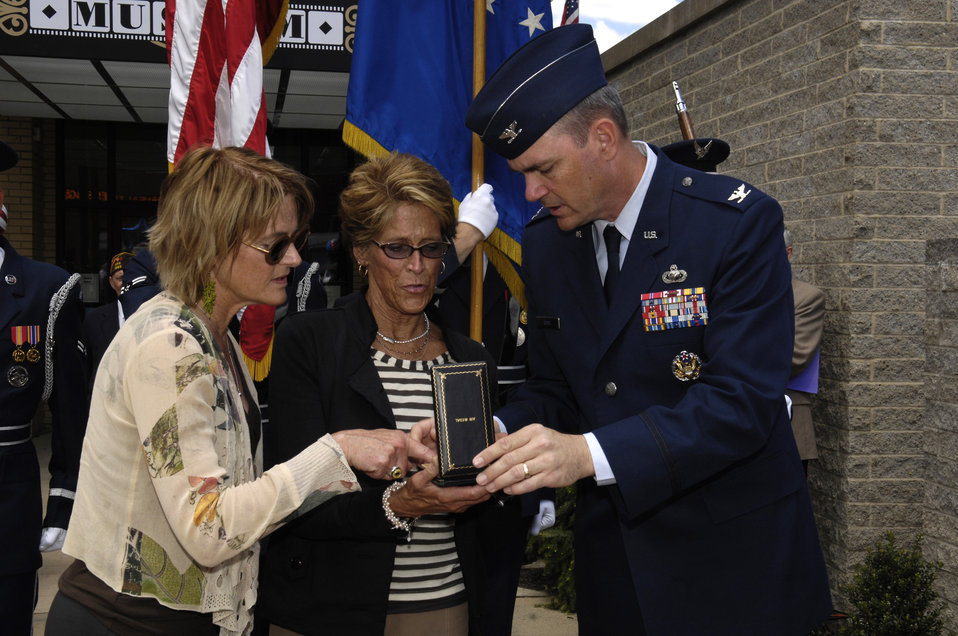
Bolling, Reserve officials honor famous actor, Airman

Col. Terry Ross presents Kelly Stewart Harcourt and Judy Stewart, the actor's daughters, their father's two Distinguished Flying Crosses and four Air Medals he earned for combat missions he flew during a centenniel celebration May 24 in the famed actor's hometown of Indiana, Pa. General Stewart flew bombing missions in World War II and became a brigadier general in the Air Force Reserve.